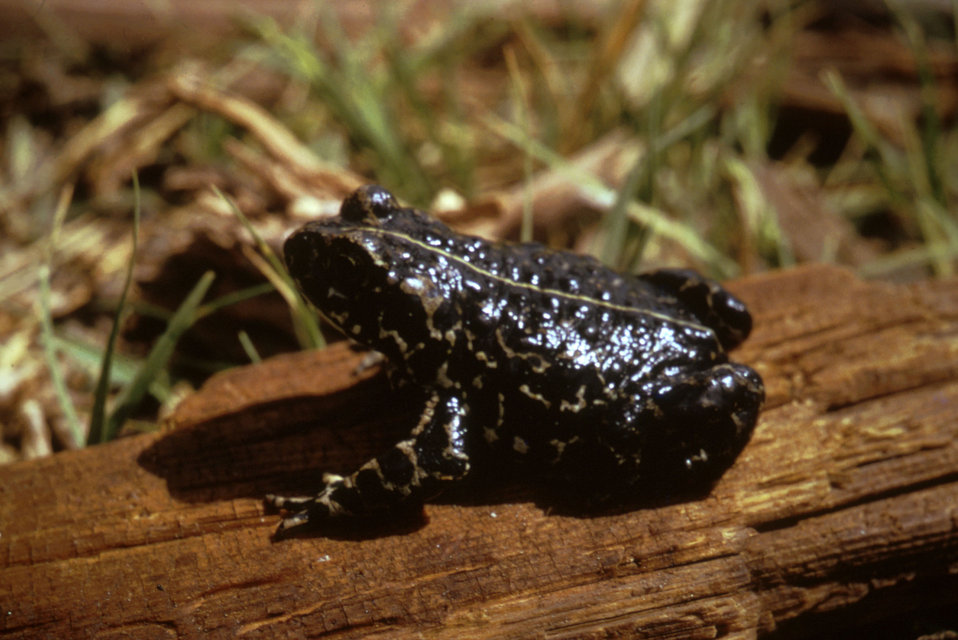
Black toad

The toad's black skin is covered in white and tan speckles and it sports a white midline down its spine from head to rump. Adults are approximately 5 cm (2 inches) in length. They are active during the warmer months and overwinter underground near their native springs. This species walks rather than hops, and never strays far from water.